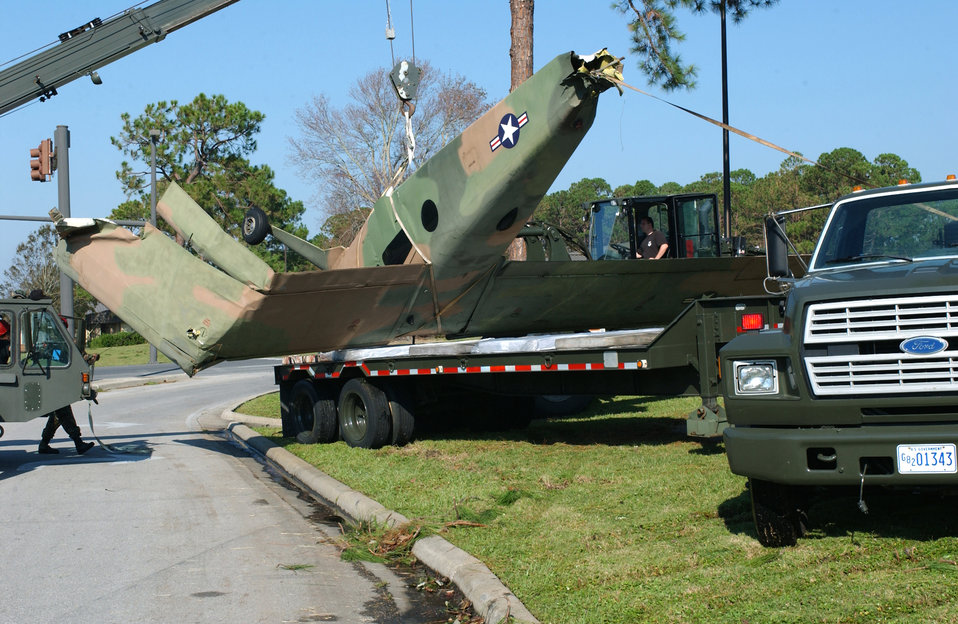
Hurlburt Field aircraft return, establishes report times

HURLBURT FIELD, Fla. -- One of the aircraft from a park display here is taken away after it was blown around by Hurricane Ivan on Sept. 16. No one was injured, and base officials are still restoring operations.